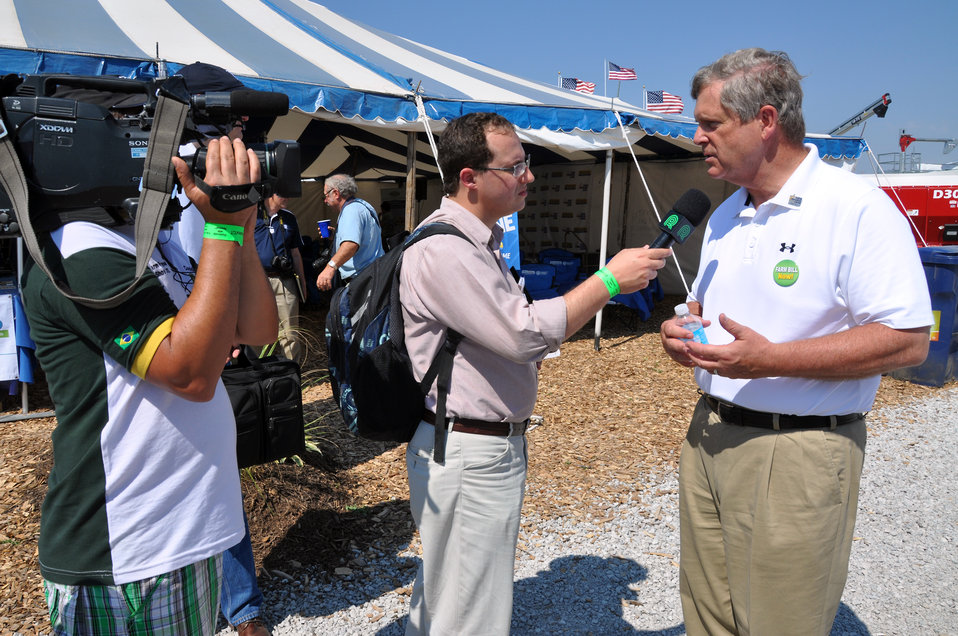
Agriculture Secretary Tom Vilsack is interviewed by a Brazilian television station during the 2012 Farm Progress Show in Boone, Iowa, on Aug. 30Agriculture Secretary Tom Vilsack (center) visits with Orion Samuelson (left) and Max Armstrong of WGN Radio during the 2012 Farm Progress Show in Boone, Iowa, on Aug. 30, 2012.